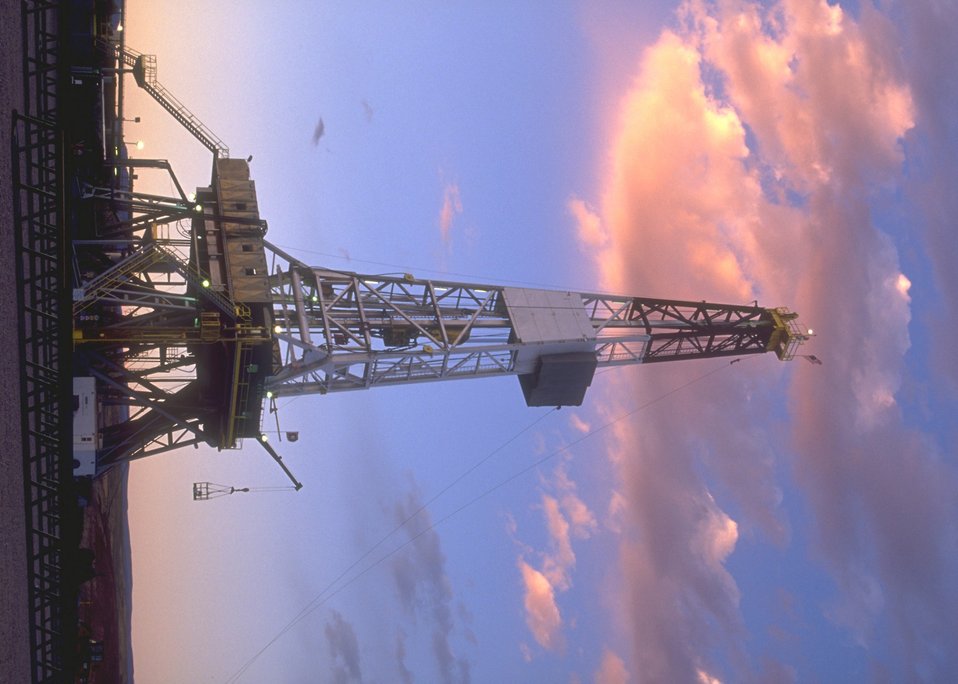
Burlington Northern deep well rig, Casper Field Office.